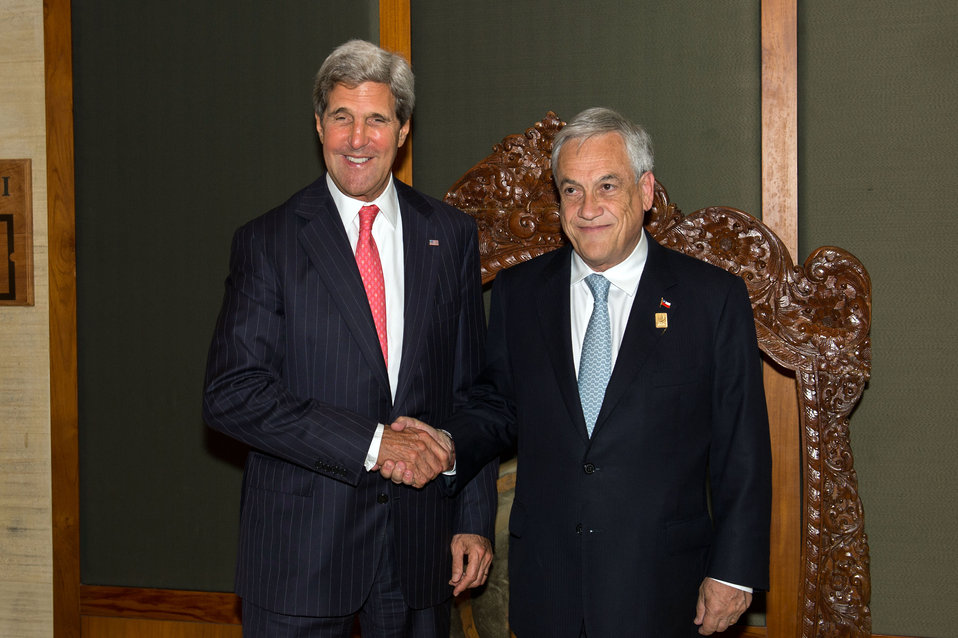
Secretary Kerry Meets Chilean President Sebastian Pinera

U.S. Secretary of State John Kerry shakes hands with Chilean President Sebastian Pinera before their meeting in Bali, Indonesia, on October 8, 2013.